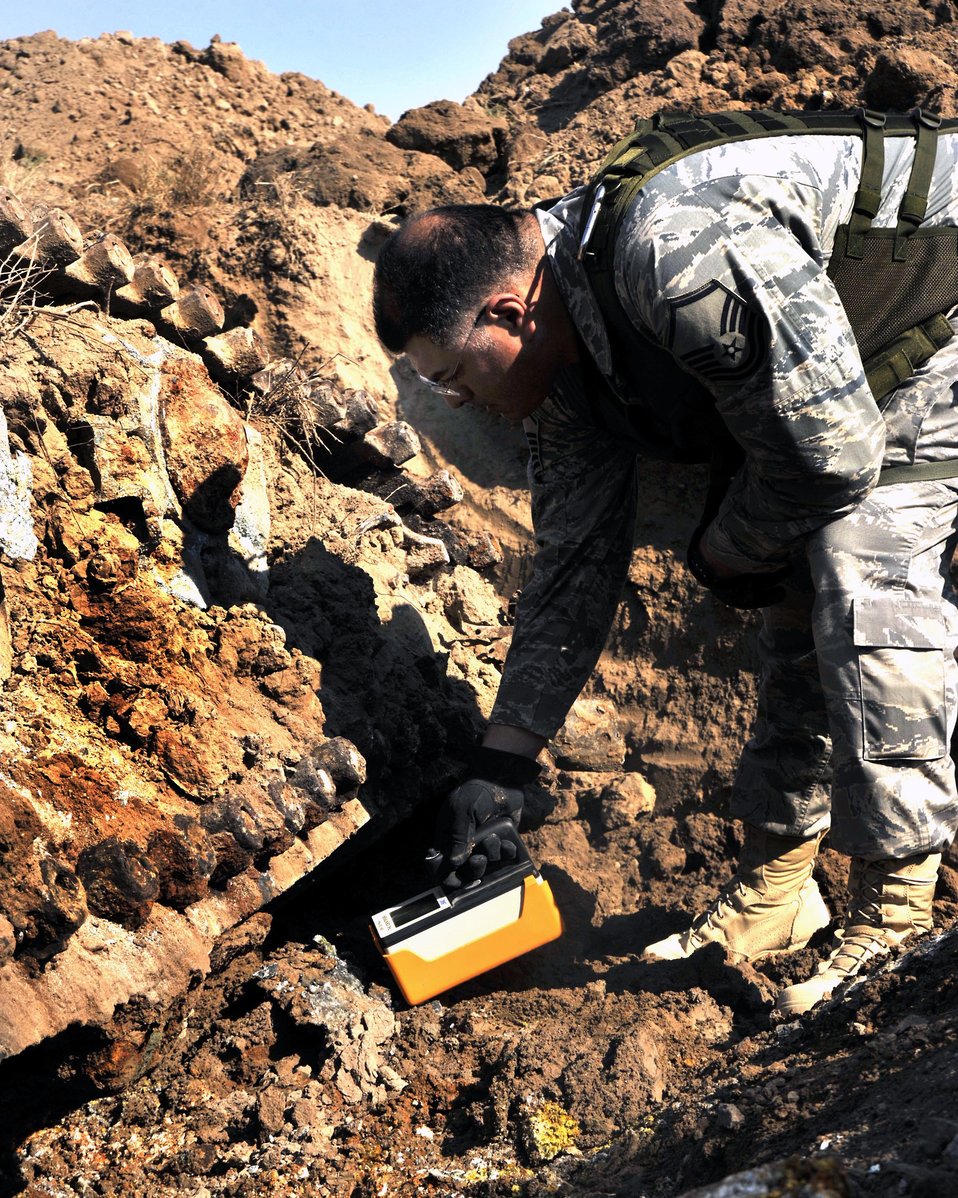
Sather Airmen clear away the debris of war, improve airport safety

Master Sgt. Daniel Torres double-checks for any hint of radiation hazards around an old Iraqi T-72 Main Battle Tank that was found burried on the airfield at Sather Air Base, Iraq. The tank was an obstruction to safe airfield operations and had to be removed. Sergeant Torres is assigned to the from the 447th Expeditionary Civil Engineer Squadron Emergency Management Flight.